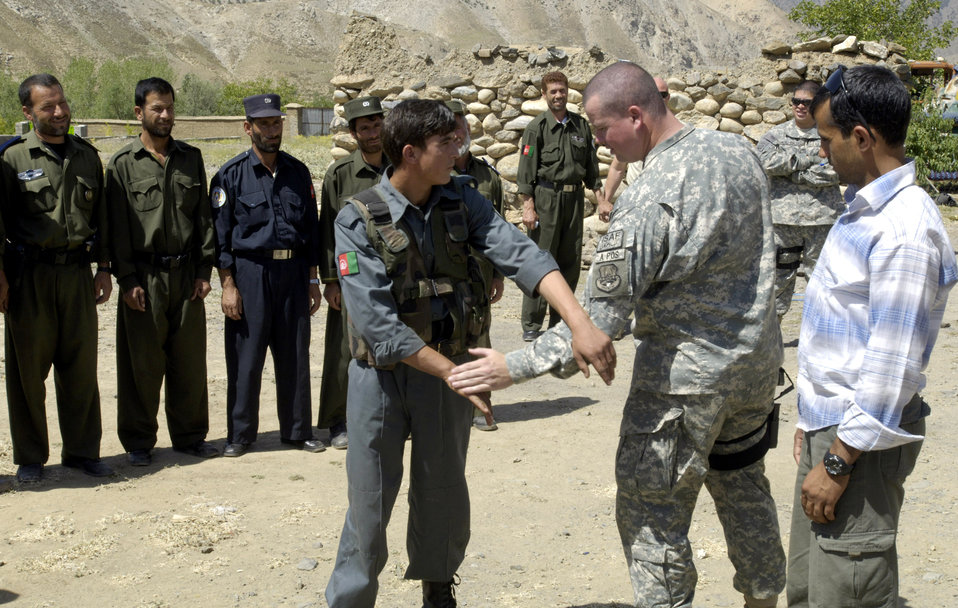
Panjshir PRT

Panjshir Provincial Reconstruction Team member Tech. Sgt. Michael Downey analyzes a blocking maneuver by a member of the Afghan National Police Aug. 6. The security forces Airman traveled with other PRT members to the Anaba district of Panjshir Province, Afghanistan, to provide training to the ANP. Sergeant Downey is deployed from the Pentagon, Washington, D.C. His mission in the PRT is to assess the infrastructure and development of the ANP forces working throughout the province.